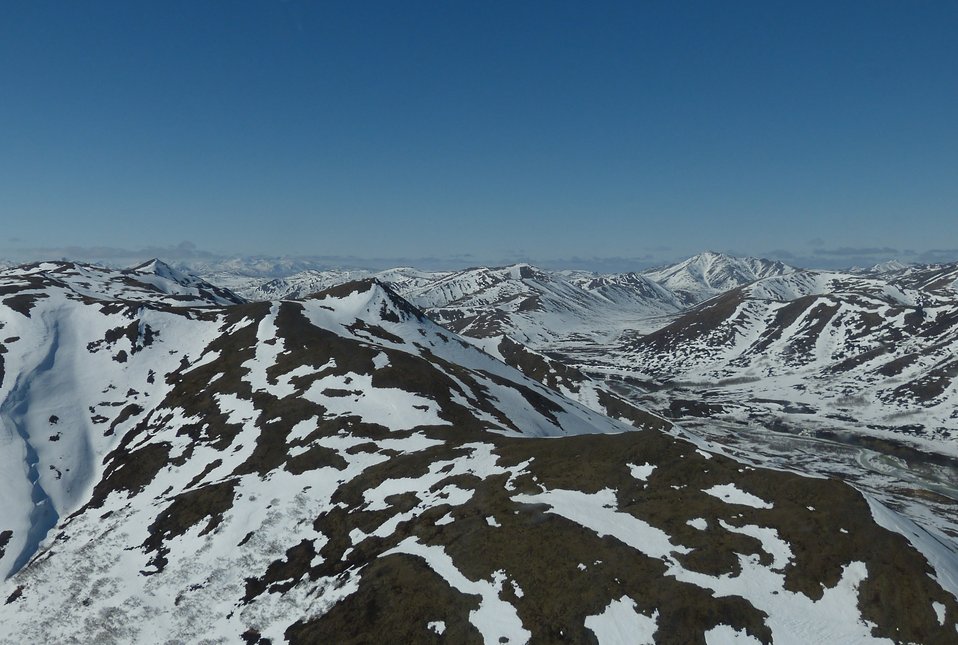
Kilbuck Mountains May2013 KSowl

Cliff-nesting raptor survey, Kilbuck Mountains, Yukon Delta National Wildlife Refuge

Photo credit: Kristine Sowl,
USFWS, YDNWR